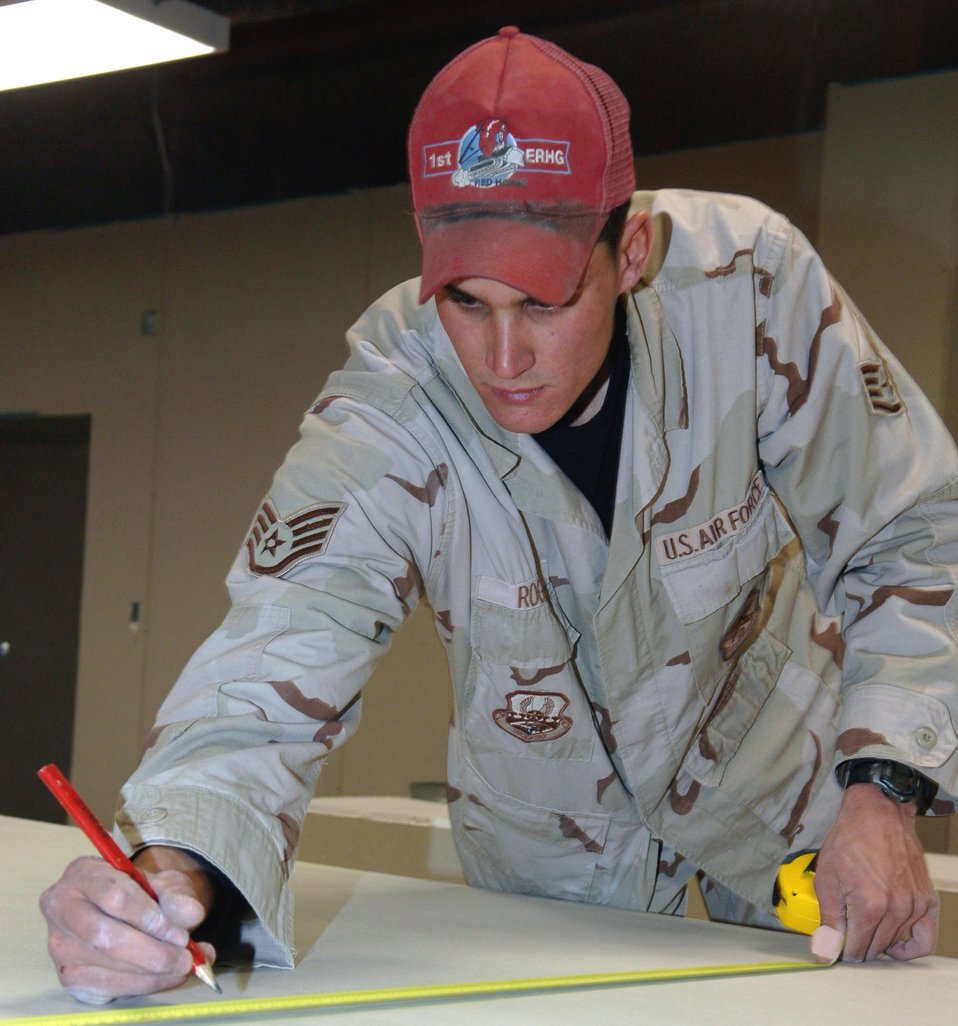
Bagram engineers

BAGRAM AIR BASE, Afghanistan (AFPN) -- Staff Sgt. Gregory Roger marks a sheet of drywall for a new passenger terminal construction project. Scheduled to open early this year, the 7,750-square-foot facility can handle 300 travelers. Sergeant Roger is from Deer Park, N.Y. He is a structural craftsman with the 1st Expeditionary Red Horse Group deployed from Nellis Air Force Base, Nev.